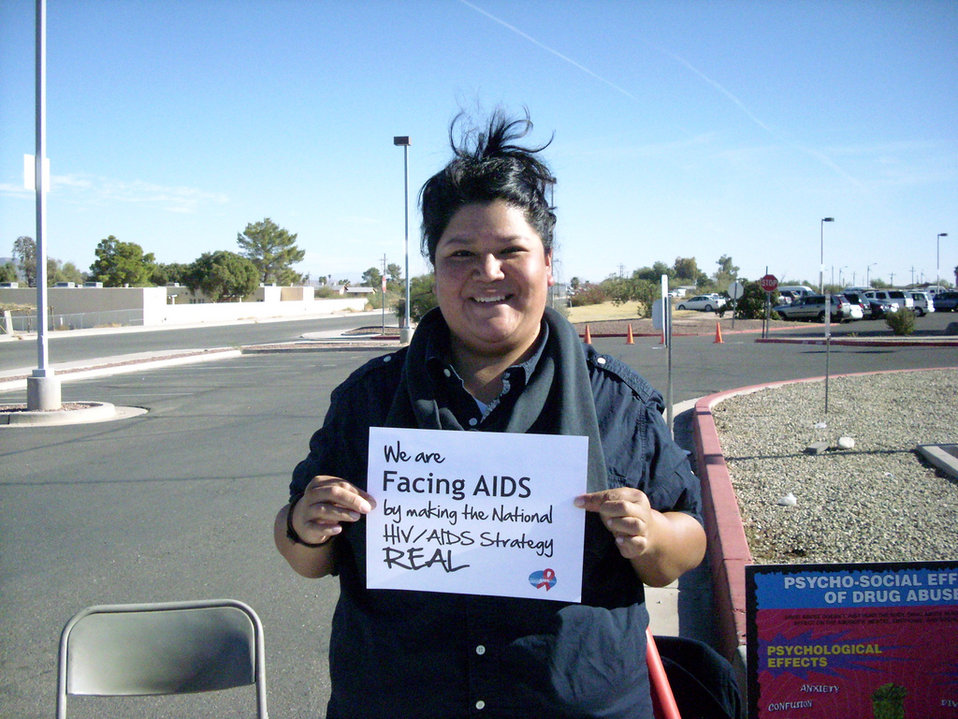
We are Facing AIDS through NHAS-41